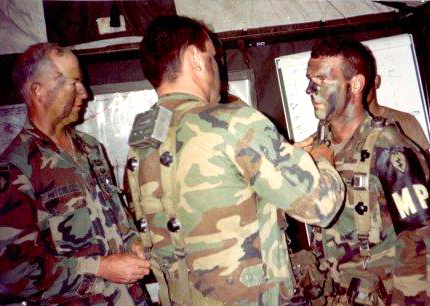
Jason Holm, Assistant Regional Director for External Affairs in the Pacific Region, served in the Army. (He's on the right.)